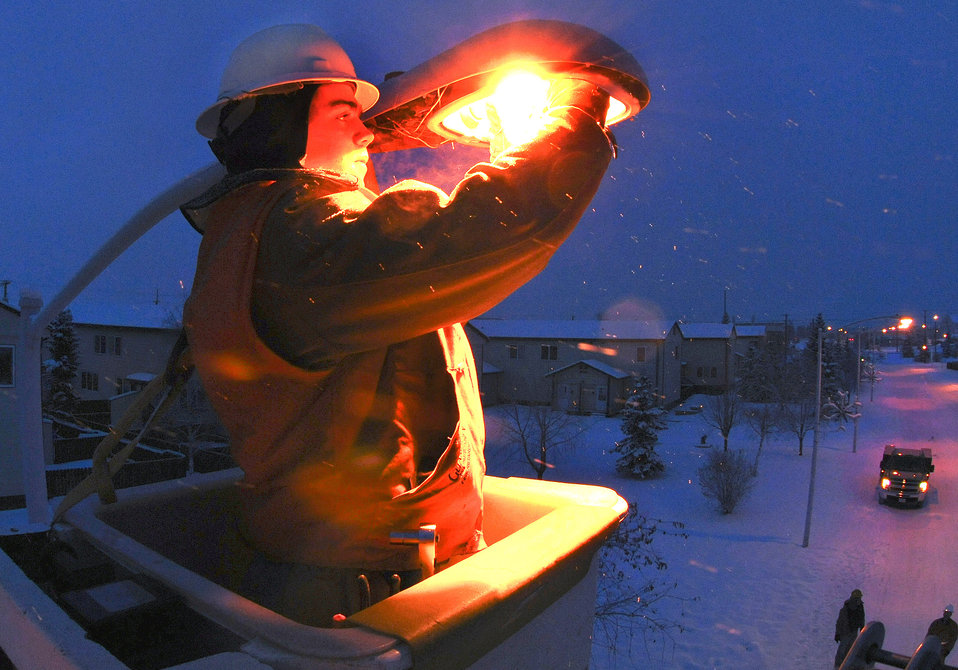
Let there be... light!

Senior Airman Scott Brown changes a street light Feb. 2 at Eielson Air Force Base, Alaska. Airman Brown accesses the lamp by using a 45-foot high-reach bucket truck. The arctic environment and constant use during the winter months causes wear on the street lamps.